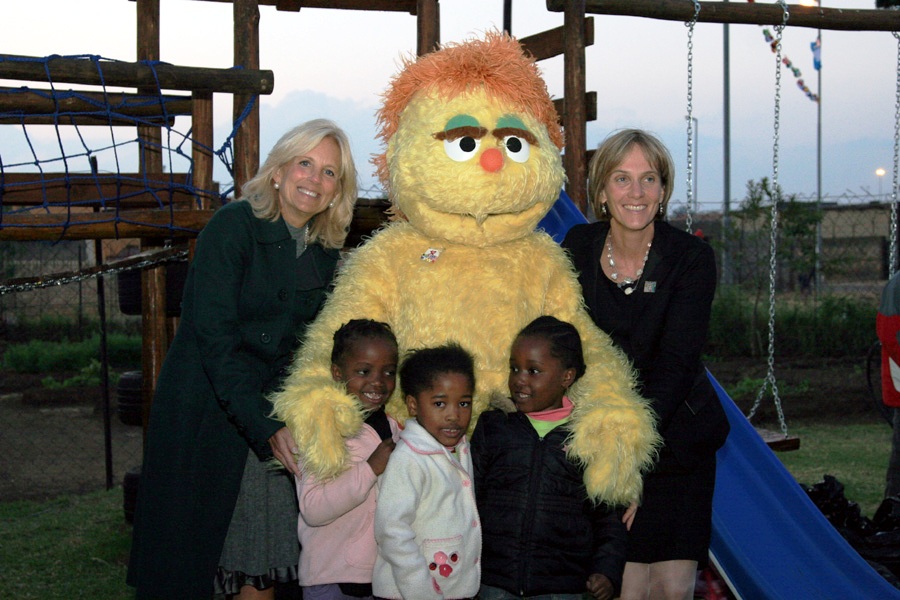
Dr. Jill Biden, Liz Berry Gips, South African Children, and Kami Pose for a Photo

Dr. Jill Biden, wife of Vice President Joseph Biden, and Liz Berry Gips, wife of U.S. Ambassador to the South Africa Donald H. Gips, pose for a photo with South African children and Kami, in Soweto, Johannesburg, South Africa, on June 10, 2010. Kami is a character on Takalani Sesame ('be happy Sesame' in Venda), which is the South African version of the children's television program Sesame Street.